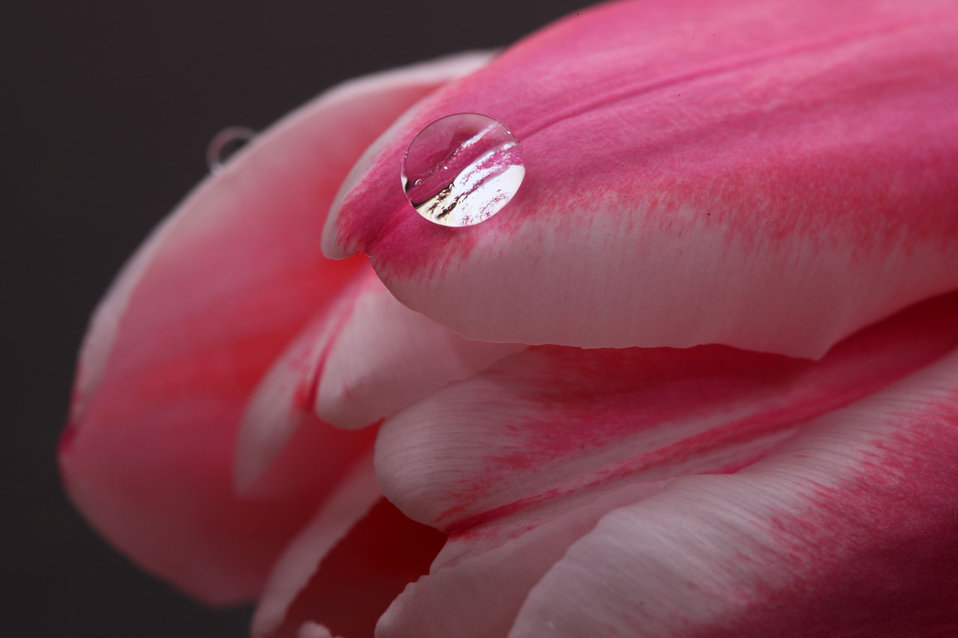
Lonely

A lonely drop of water, his companion just a petal away, but it is an impossible distance....